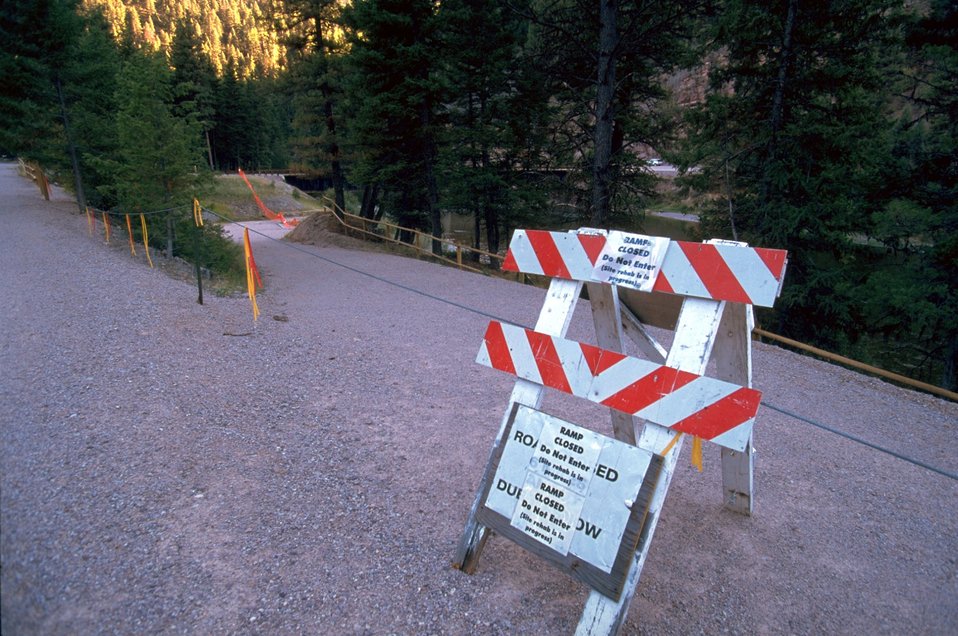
Blackfoot River-Whitaker Bridge boat launch (closed until vegetation is re-established following construction).